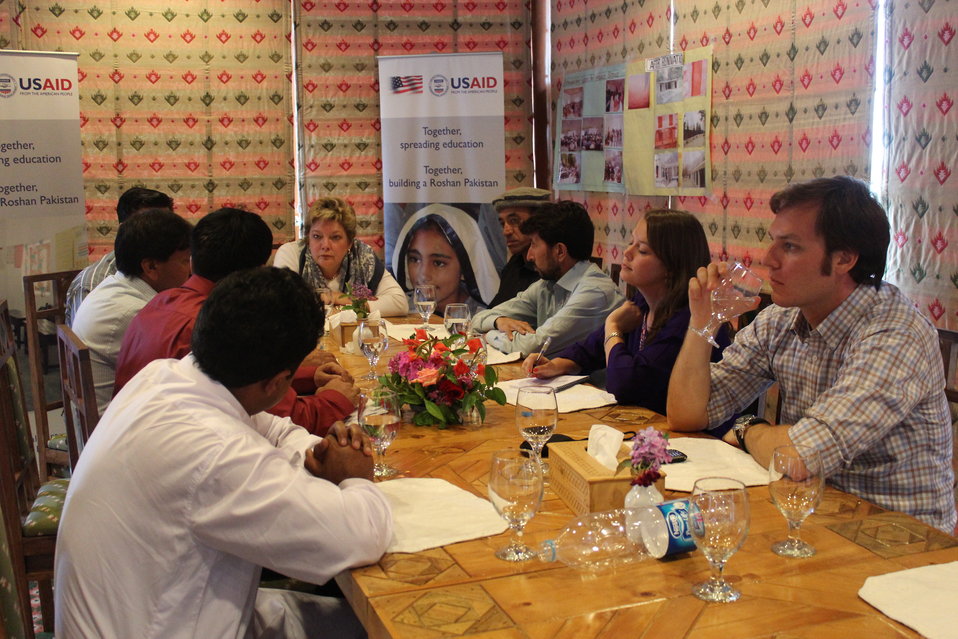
Deputy Director Karen Freeman’s visit to Gilgit Library

Karen Freeman visited the Municipal Gilgit Library on Monday, July 9. She was accompanied by other USAID staff and the staff from the Ambassador’s Fund Program. A the library, she met with Deputy Commissioner of Gilgit, Mr. Arqam and library staff, toured a photo display, and had an informal discussion with the library staff and community members about the USAID-funded project. Library staff showed the equipment funded by USAID (computers, internet, scanners, etc). The visit concluded by a Q & A session with media.